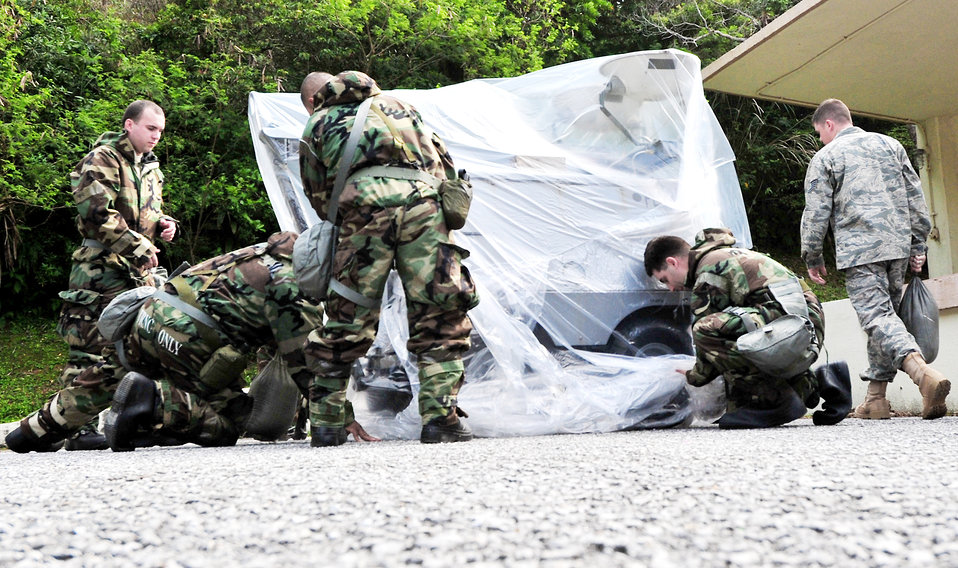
Kadena Airmen train to 'survive'

Members of the 18th Munitions Squadron take part in the